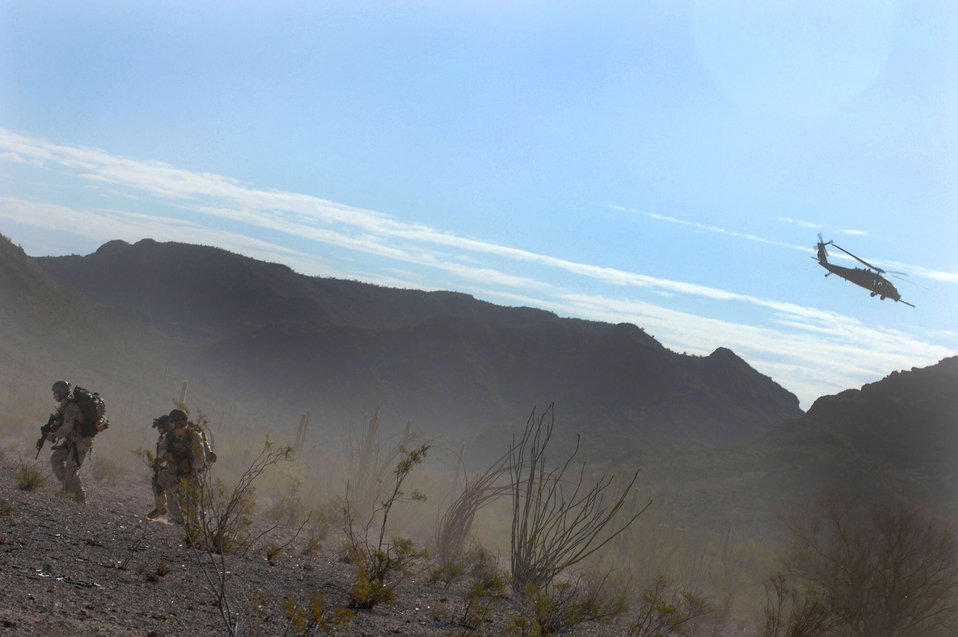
Angel Thunder 2007

Pararescuemen from the 48th Rescue Squadron are on the ground after insertion by 55th Rescue Squadron HH-60 helicopters during Exercise Angel Thunder in Gila Bend, Ariz., July 16. The exercise is designed to provide realistic combat search and rescue training for Airmen in combat rescue forces.